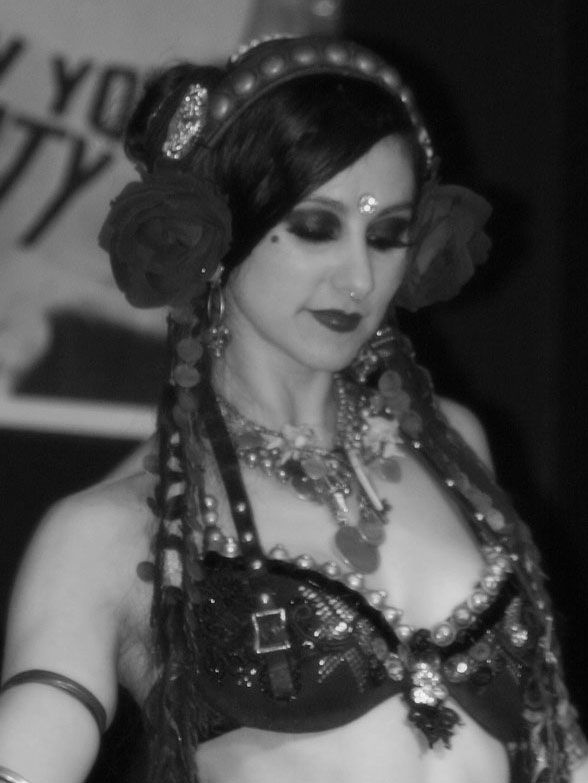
Rachel Brice / Dance